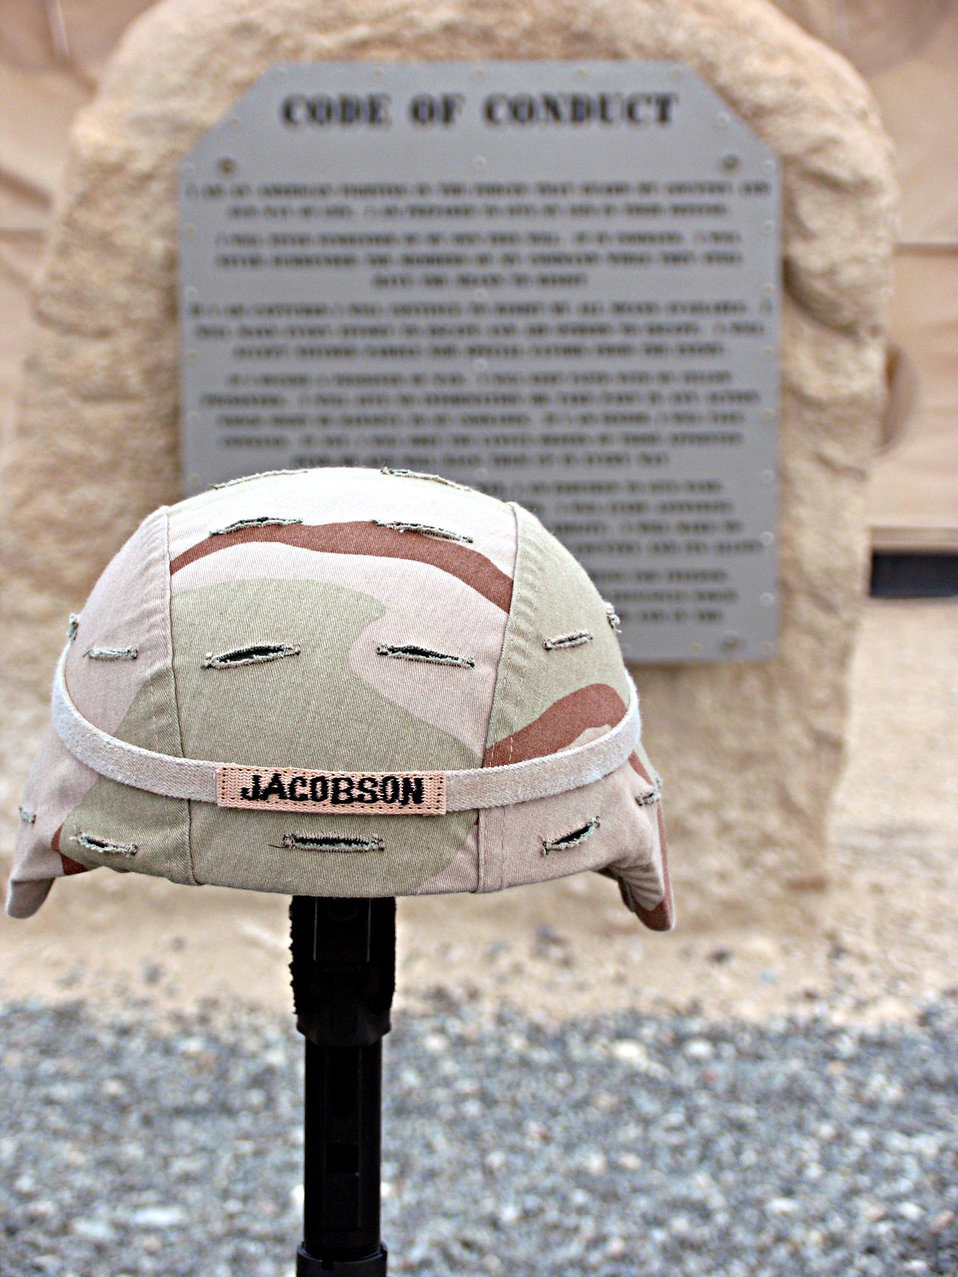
Remembrance ceremony

This display was built by members of the 386th Expeditionary Security Forces Squadron for a remembrance ceremony to honor veterans, including Airman 1st Class Elizabeth Jacobson, who was killed while on a convoy near Camp Bucca, Iraq. Her vehicle was hit by an improvised explosive device on Sept. 28, 2005. She was the first female Airman killed in the line of duty supporting Operation Iraqi Freedom.